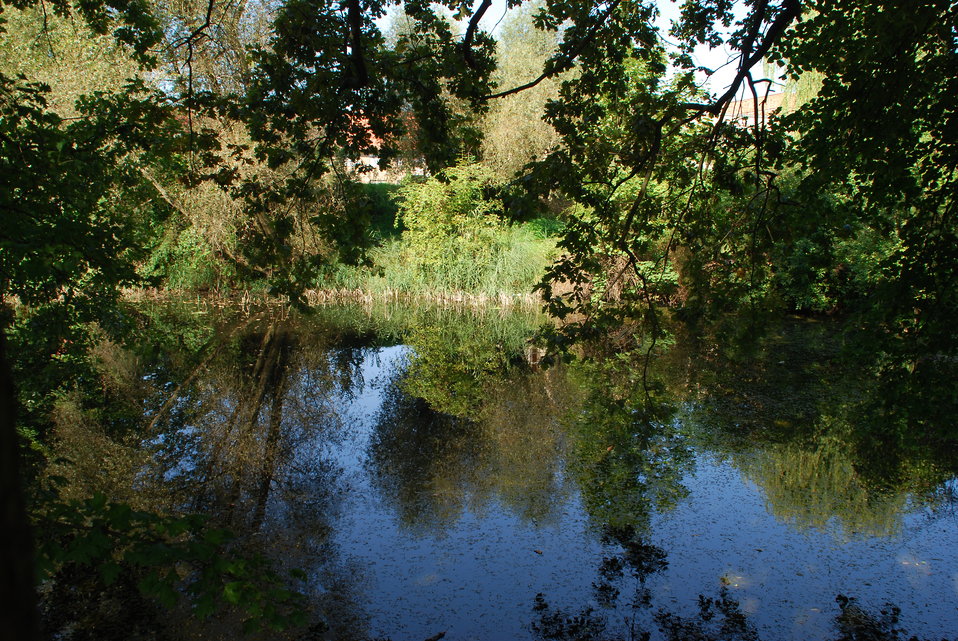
Theaterteich in Frankfurt (Oder), am ehemaligen Kleist-Theater, Friedrich-Ebert-Straße